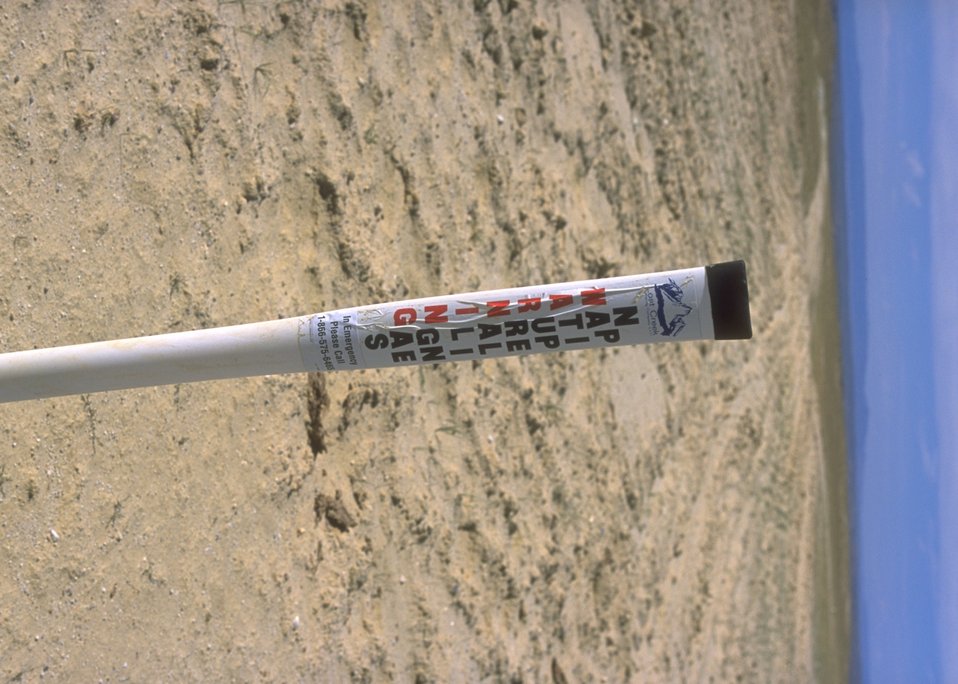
Natural gas pipeline ROW marker at Gas Hill Abandoned Mine Lands, Lander Field Office.